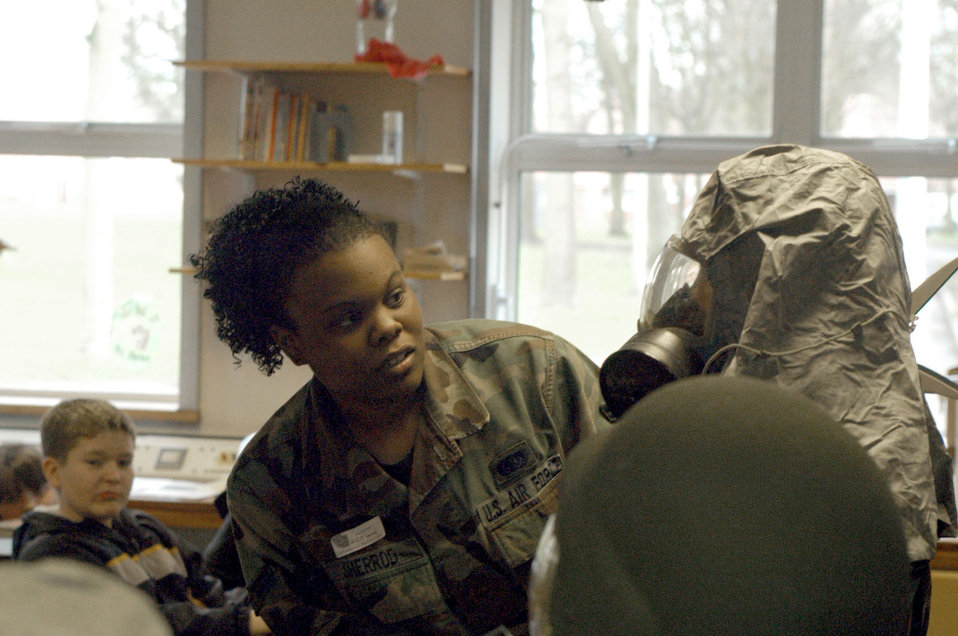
Students 'deploy' for Operation Combat Care

ROYAL AIR FORCE FELTWELL, England -- Airman 1st Class Attika Sherrod inspects a gas mask during a mock processing line at Lakenheath Middle School here Feb. 23. Airman Sherrod is assigned to the 48th Logistics Readiness Squadron at Royal Air Force Lakenheath.